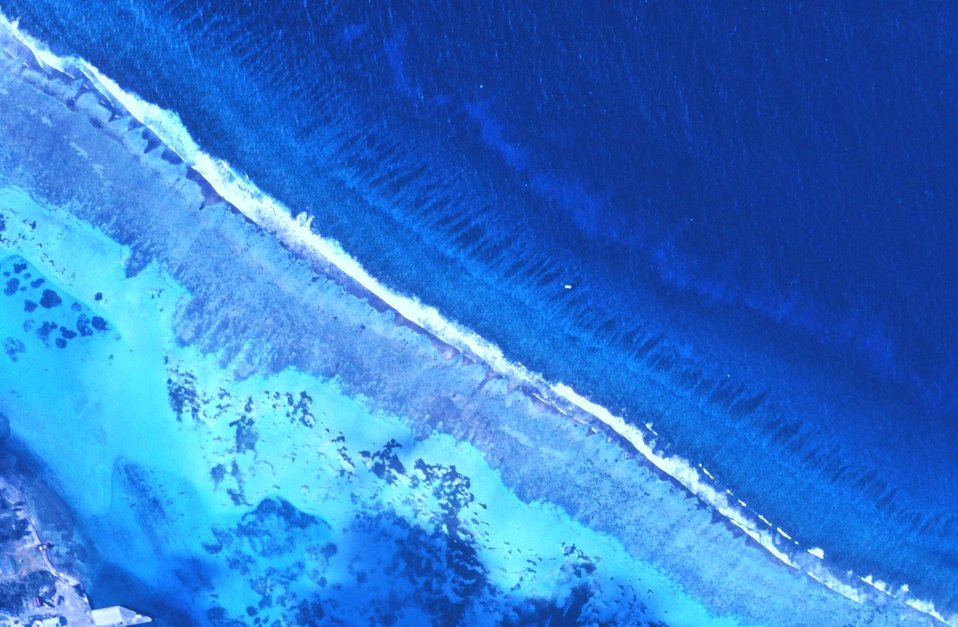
The meeting of land, reef, and sea.